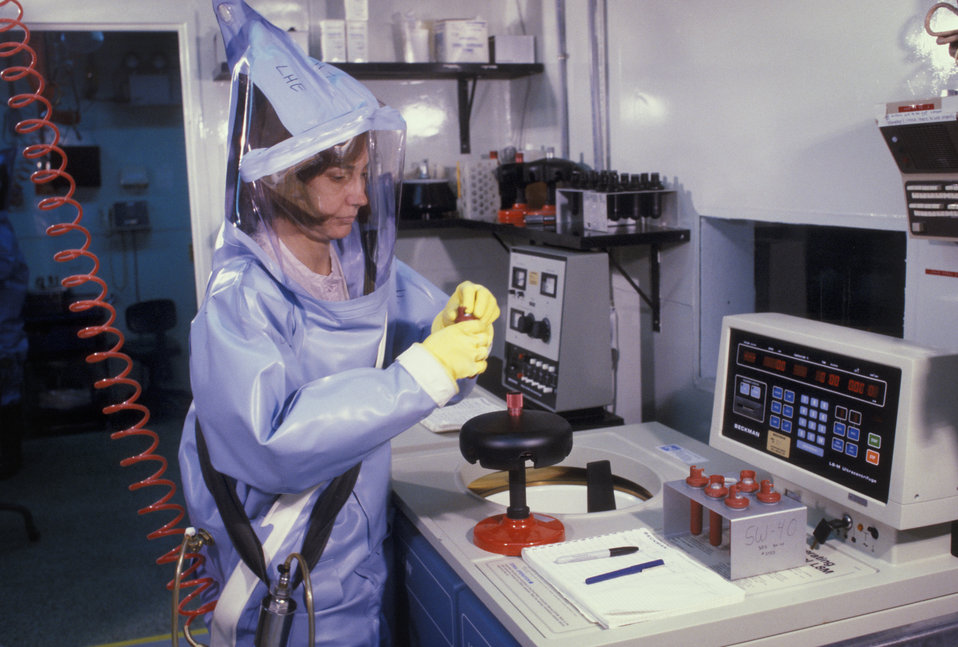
A CDC scientist conducts laboratory research in the Biosafety Level 4 laboratory, Atlanta, GA.